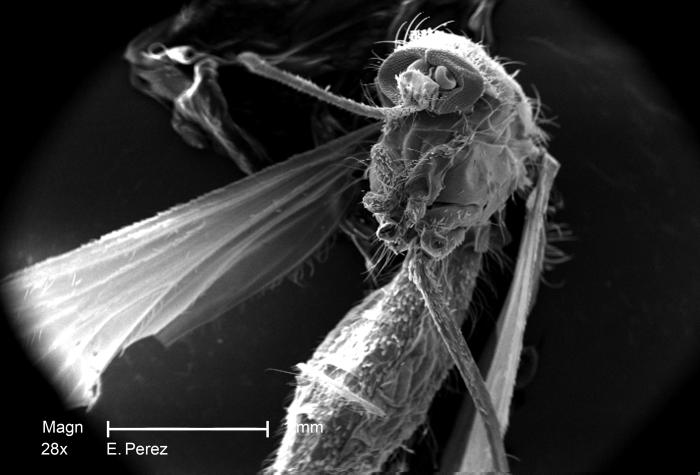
Photographed under a very low magnification of only 28X, in order to capture the cephalic, thoracic and abdominal segments together, this scanning electron micrograph (SEM) revealed some of the exoskeletal morphology on the surface of an unidentified mosquito found deceased in the suburbs of Decatur, Georgia. An already structurally-frail organism, this insect was discovered in a very dry, dessicated stated, and therefore, was missing a number of its body parts, including its antennae, and five of its six legs.